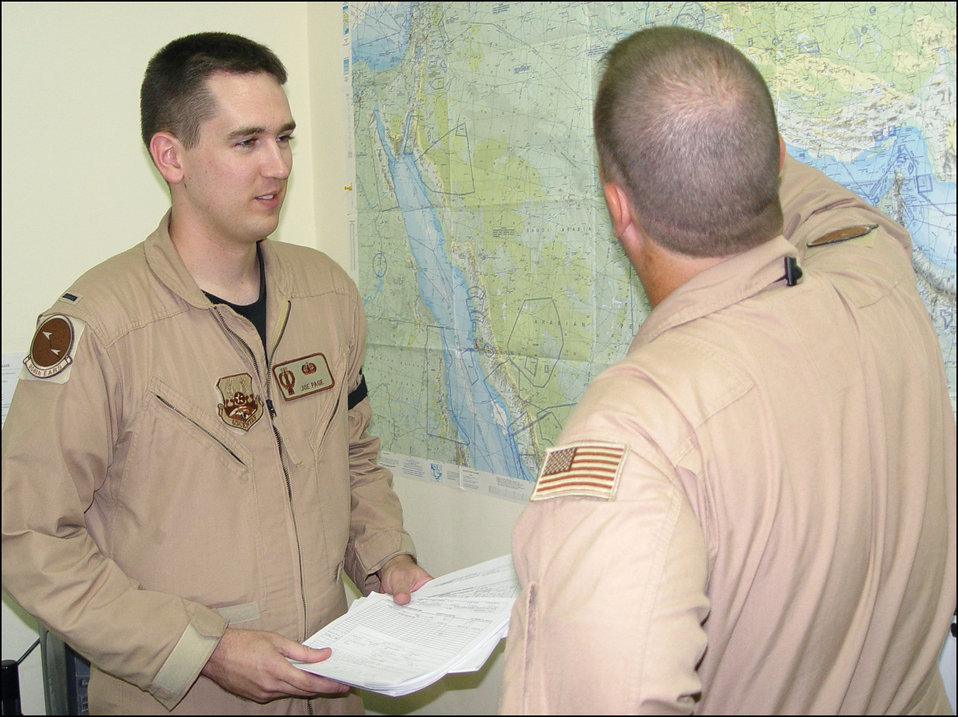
Missile crewmember deploys with refuelers

SOUTHWEST ASIA -- First Lt. Joe Page discusses a flight plan with Master Sgt. Troy Doane at a forward-deployed location. Lieutenant Page is a flight planner with the 908th Expeditionary Air Refueling Squadron, and Sergeant Doane is the chief boom operator for the squadron. The lieutenant is deployed from Minot Air Force Base, N.D., where he is a missile combat crew commander.